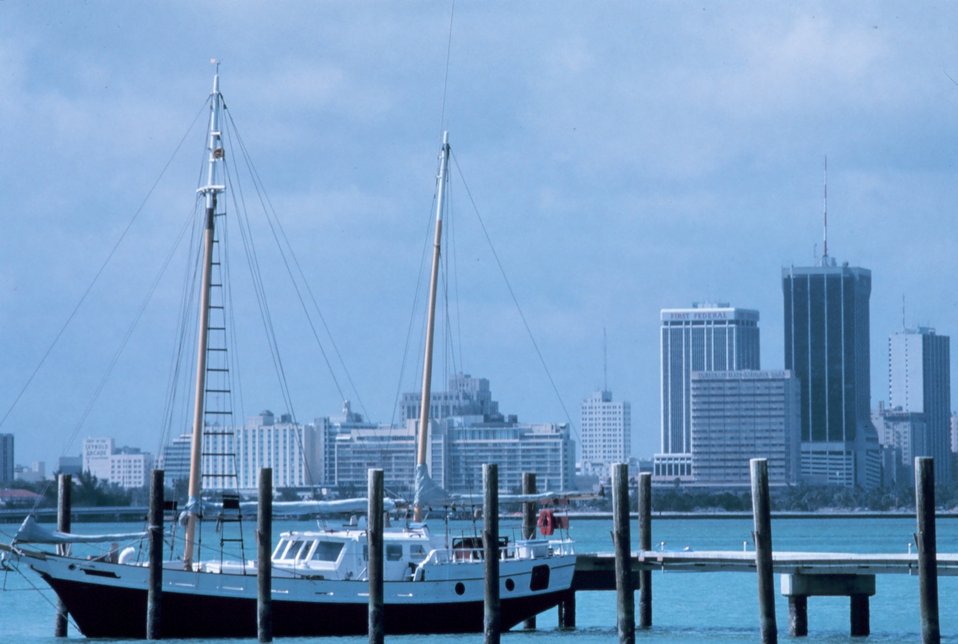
Downtown Miami from across Biscayne Bay